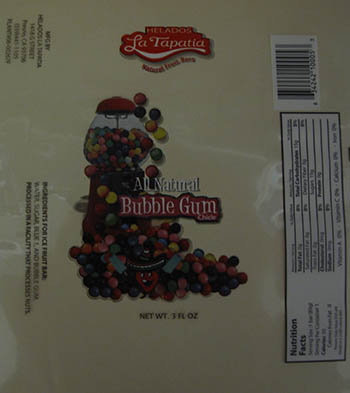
RECALLED – Ice cream products

March 19, 2014 – Product Recall – Helados La Tapatia, Inc. Recalls Products Because of Possible Health Risk.